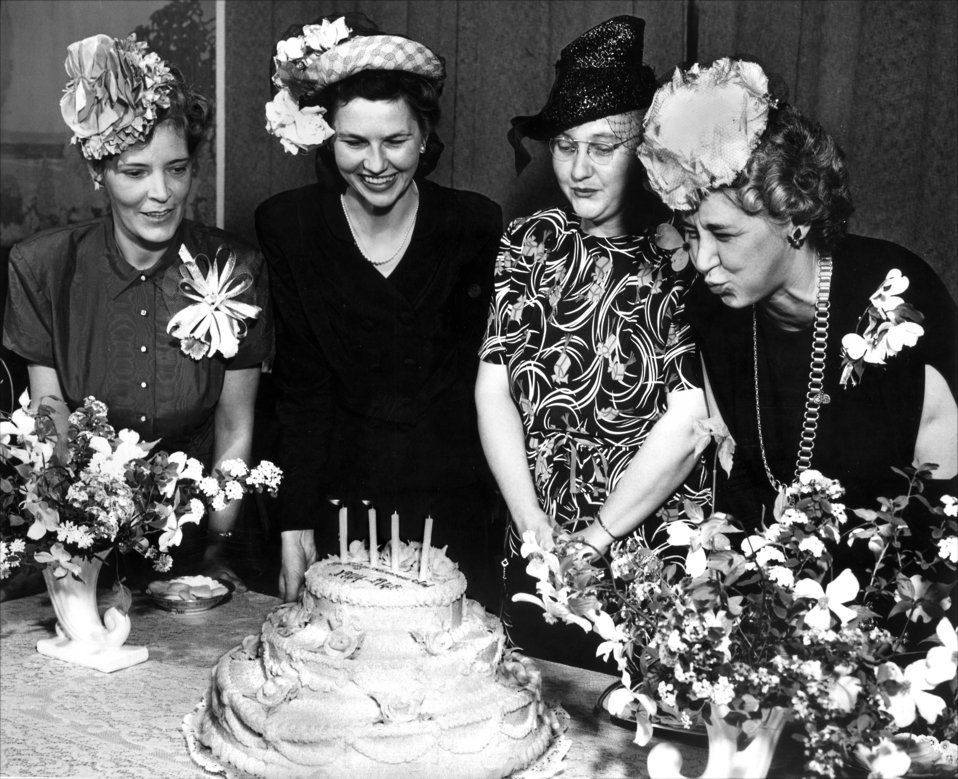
Women's Club Birthday Oak Ridge

4460-2 DOE photo Ed Westcott

Women's Club Birthday Oak Ridge Tennessee 4-16-1948